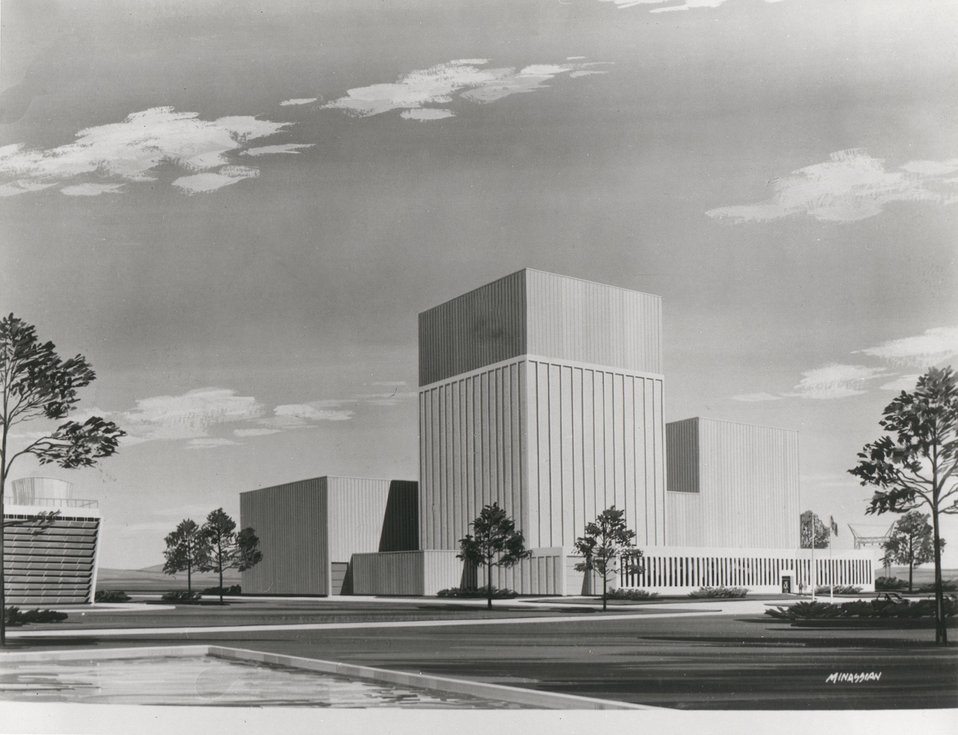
This is an artist concept of the Washington Public Power Supply System's 1100 megawatt nuclear power plant, Hanford Number Two. c. 1972.